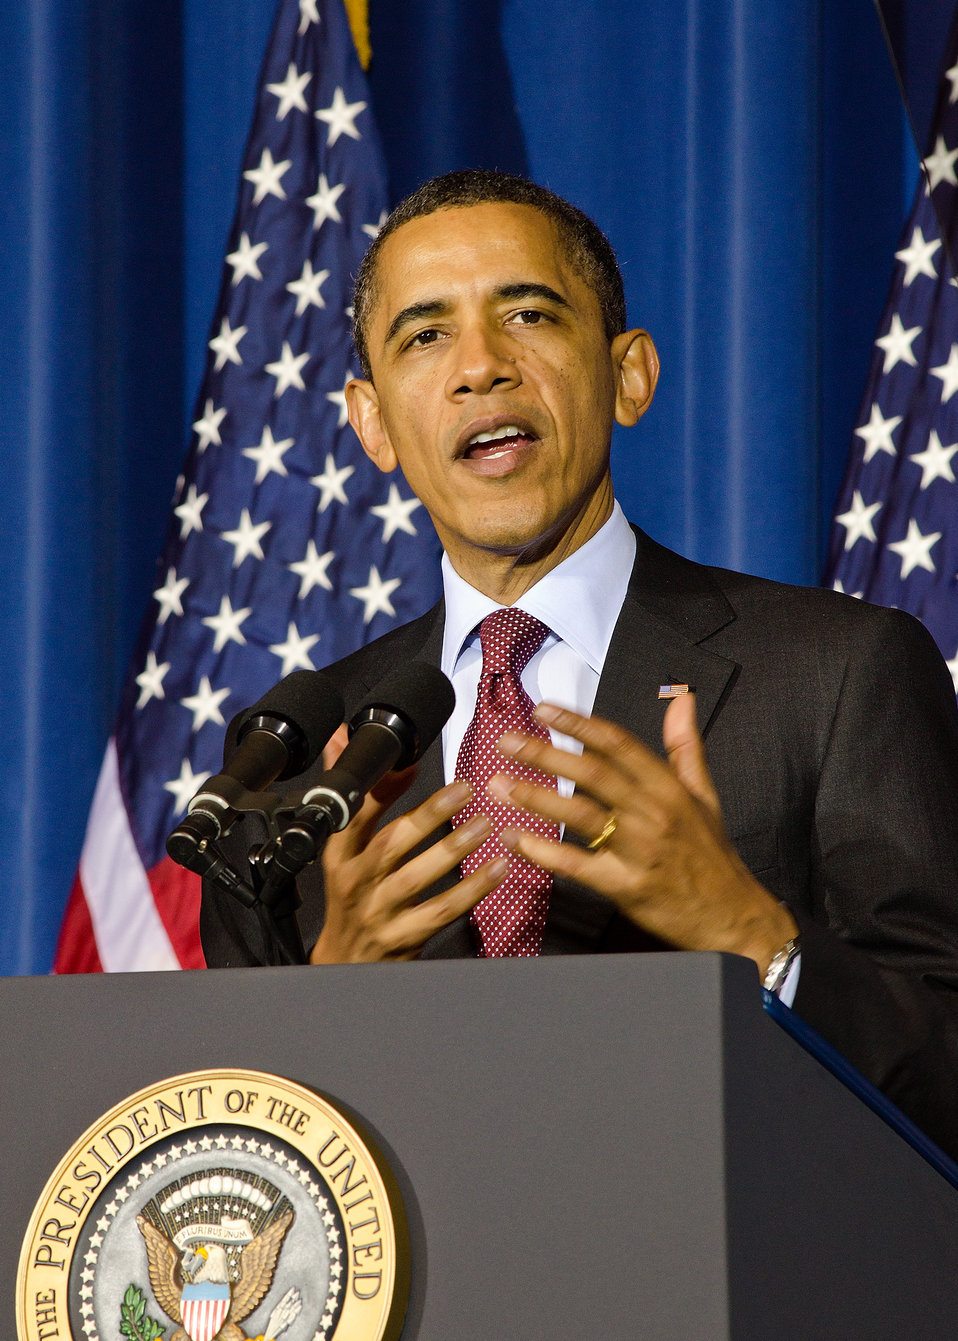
President Barack Obama addressed the audience at the White House Conservation Conference, “Growing America’s Outdoor Heritage and Economy” at the Interior Department, Yates Auditorium in Washington, D.C., on Friday, March 2, 2012 The conference is part of President Obama’s, “America’s Great Outdoors Initiative” to spotlight community-driven conservation efforts and discussed how to build their success.